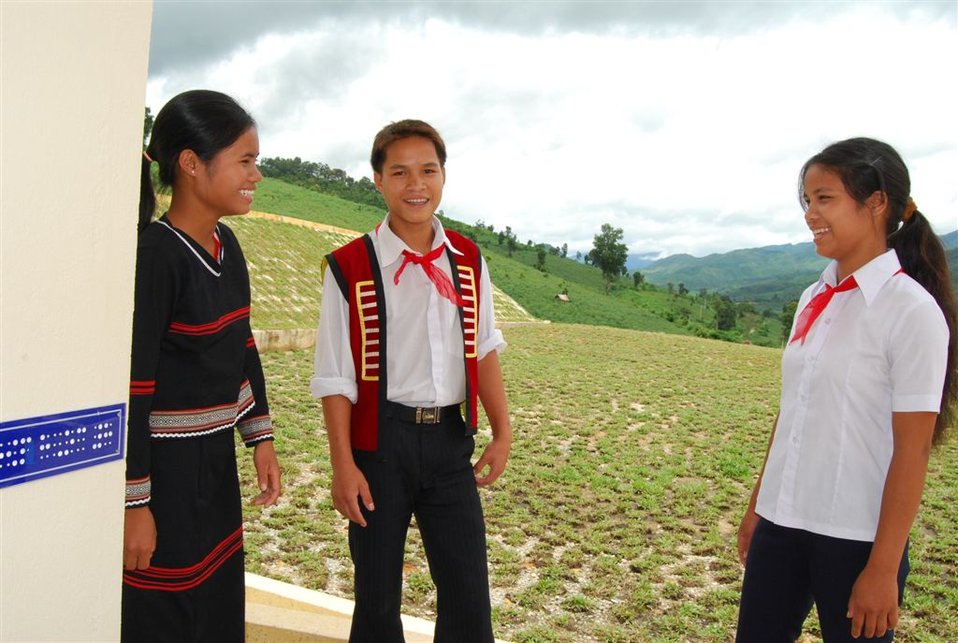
Students Y Nga, A Nga, and Y Chuc enjoy learning at the new Kon Ray School built with support from the American people through USAID.